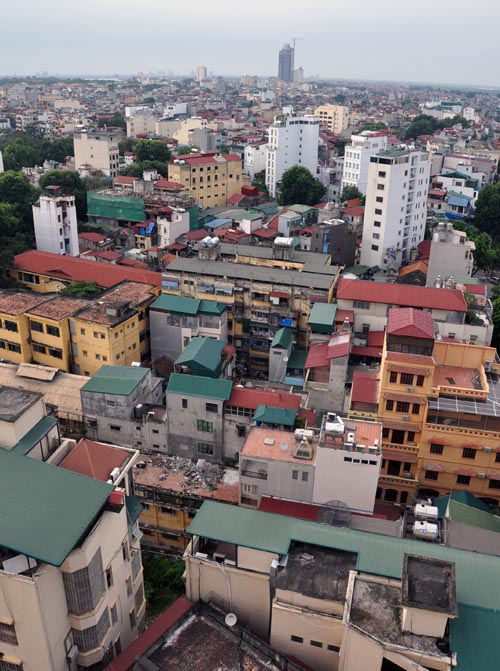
Hanoi skyline